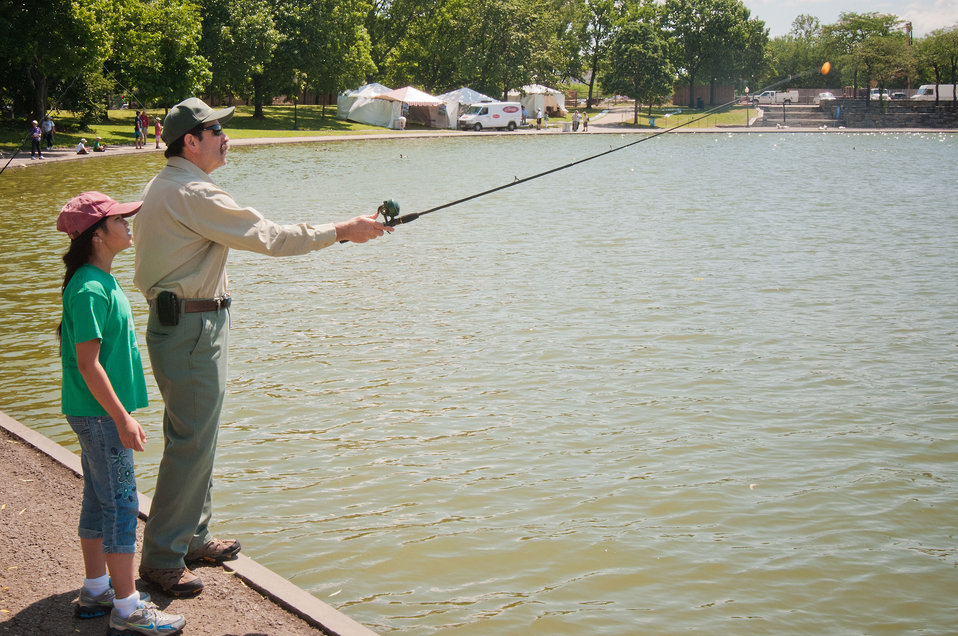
U.S. Forest Service Associate Deputy Chief Jim Pena assists John Eaton Elementary School student Josie Prentice with her fishing pole during National Fishing Day at Constitution Gardens in Washington, D.C. on Monday, June 4, 2012. The Forest Service along with many Federal agencies, non-profit organizations and outdoor recreation companies demonstrated the joy of fishing to local elementary school students.